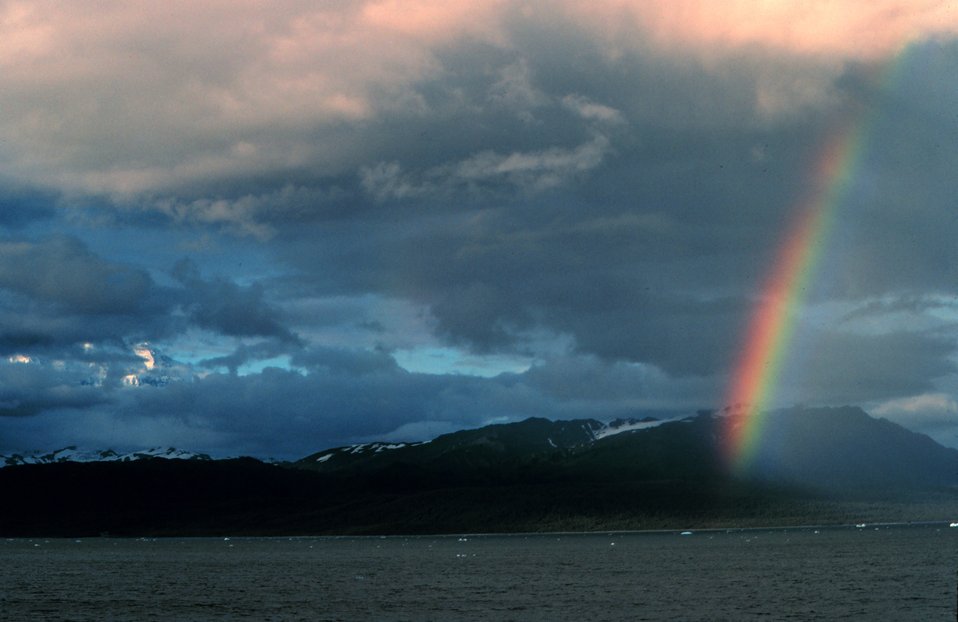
A rainbow somewhere along the Alaska Peninsula.